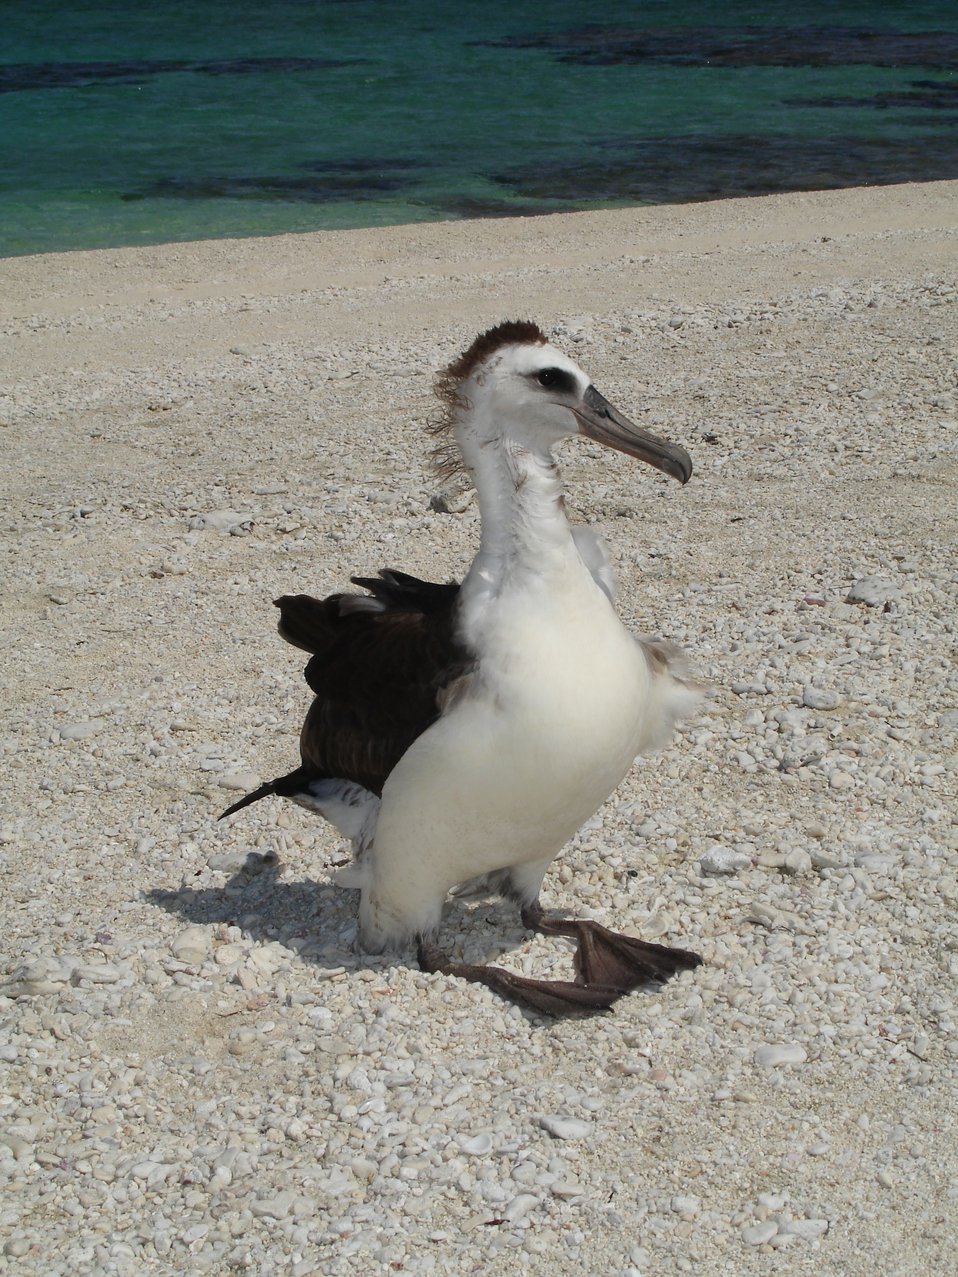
Laysan albatross chick